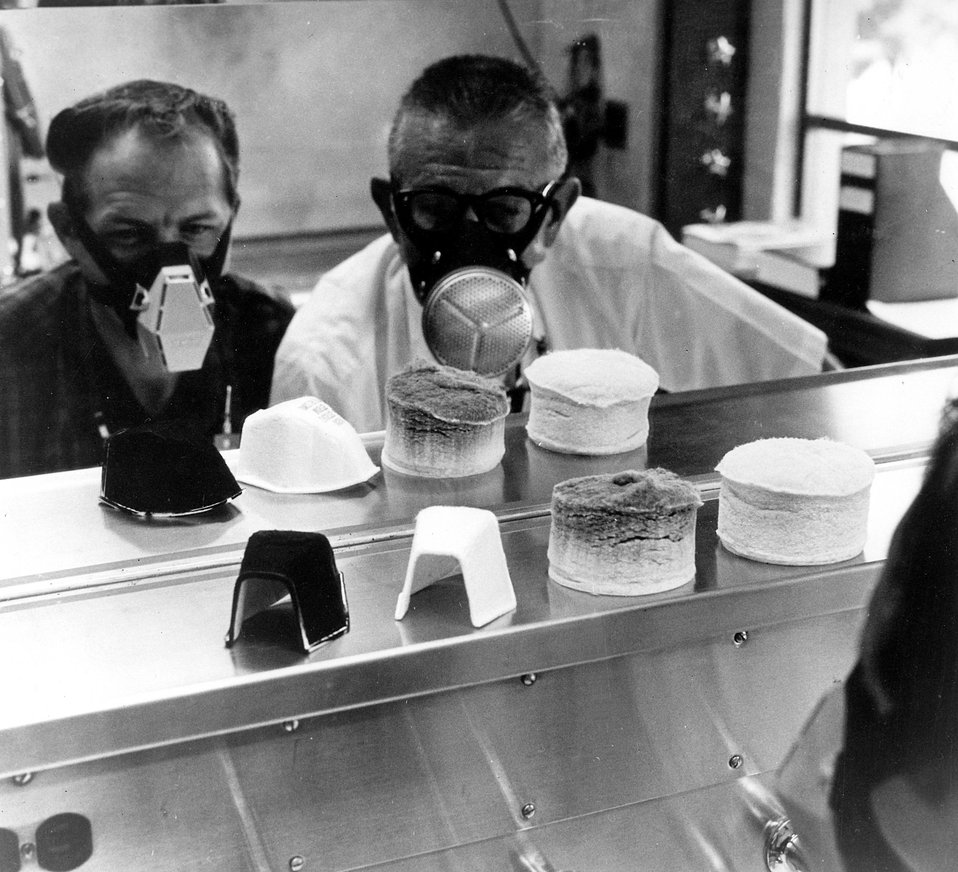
Uranium miner's safety research includes testing filters and respirators in mines as well as in the laboratory. c. 1969